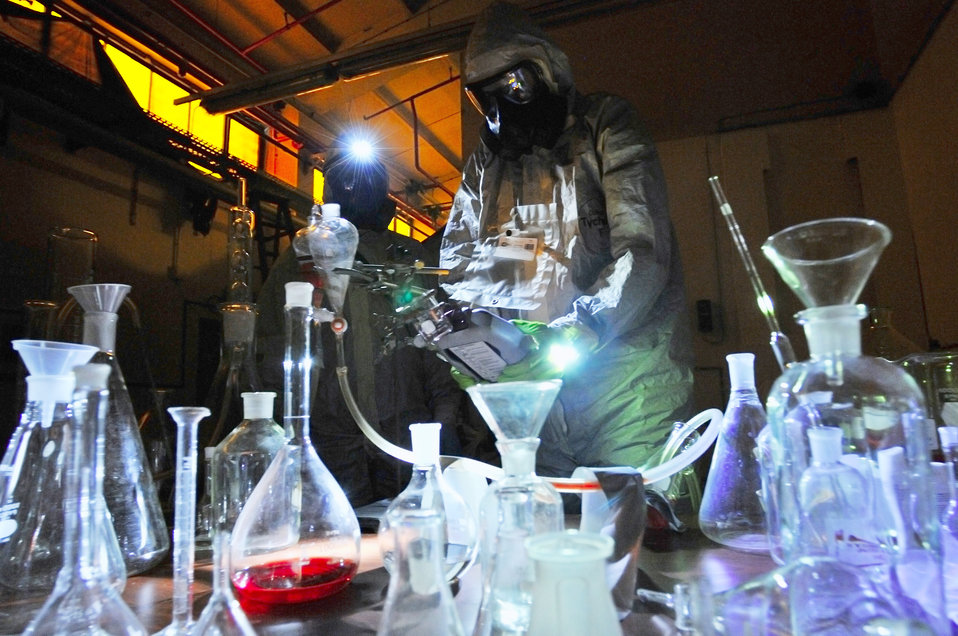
Airmen in Europe test threat responses

Staff Sgt. Joshua McDowell test chemicals in a simulated emergency environment during the U.S. Air Forces in Europe Chemical, Biological, Radiological and Nuclear Challenge June 23 at Ramstein Air Base, Germany. Sergeant McDowell is a 52nd Civil Engineer Squadron emergency manager.